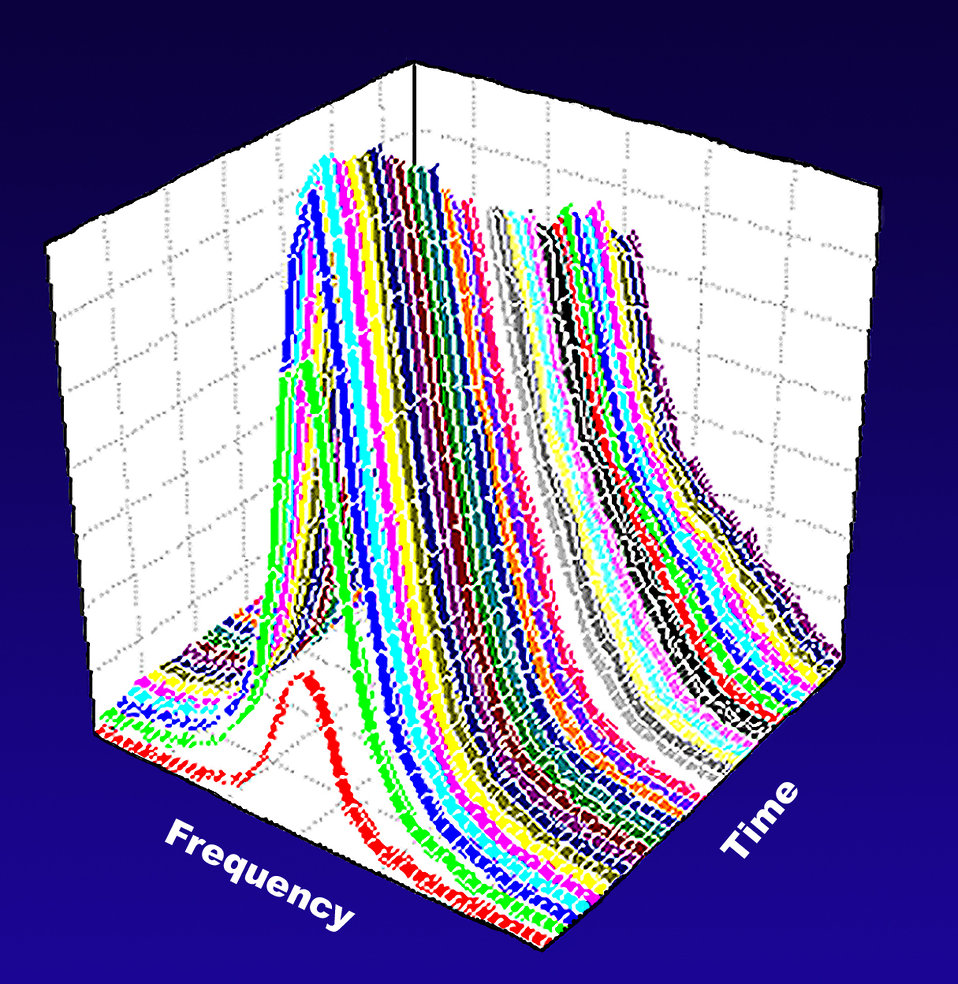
Ultrafast Laser Speeds Up Quest for Atomic Control

Just as a satellite requires a boost of power to change from one Earth orbit to a higher one, electrons require an energy boost (in quantum steps) to change from one orbital pattern around the nucleus to another. JILA researchers used pulses of ultrafast laser light to boost the outer electron in rubidium atoms to higher, 'excited' levels, then detected the energy released by the atoms in the form of fluorescent light as they 'relaxed' back to their natural state. This three-dimensional plot shows changes in the intensity of the light emitted by the atoms in 300 microseconds. The JILA technique should allow scientists to measure and control these 'transitions' between atomic energy levels much more efficiently than with conventional methods.